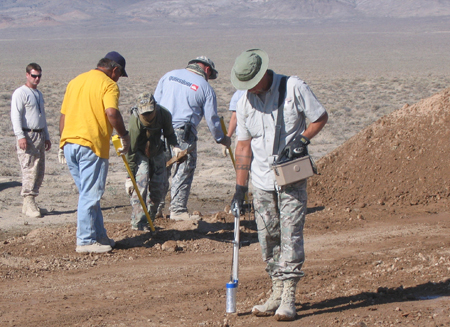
UXO tech and RCT screening soil

More than 1,200 acres of the Tonopah Test Range (TTR) in central Nevada are being cleared of munitions and explosives using American Recovery and Reinvestment Act funds. Environmental cleanup of this area, known as the Bomblet Target Area, is the responsibility of the U.S. Department of Energy, National Nuclear Security Administration Nevada Site Office in accordance with the Federal Facility Agreement and Consent Order (FFACO).

Unexploded ordnance (UXO) and radiation control technicians conduct a surface clearance survey at the TTR Bomblet Target Areas